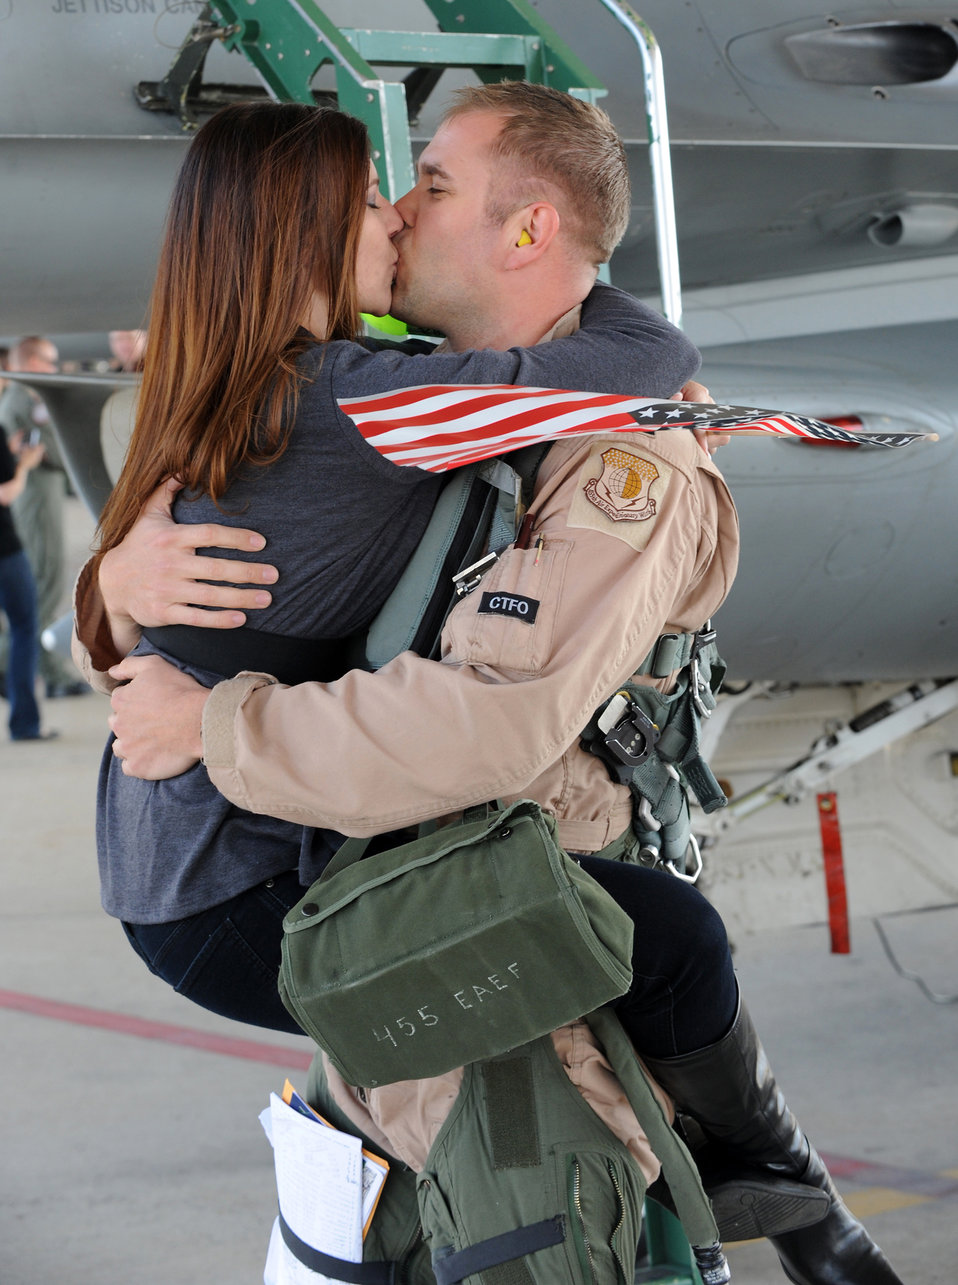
Welcome home!

Kerri Bandy gets a hug and kiss from her husband, Capt. Aaron Bandy, as he steps off the ladder of his F-16 Fighting Falcon April 15, 2011, at Hill Air Force Base, Utah, upon return from Afghanistan. Captain Bandy is a pilot assigned to the 4th Fighter Squadron.